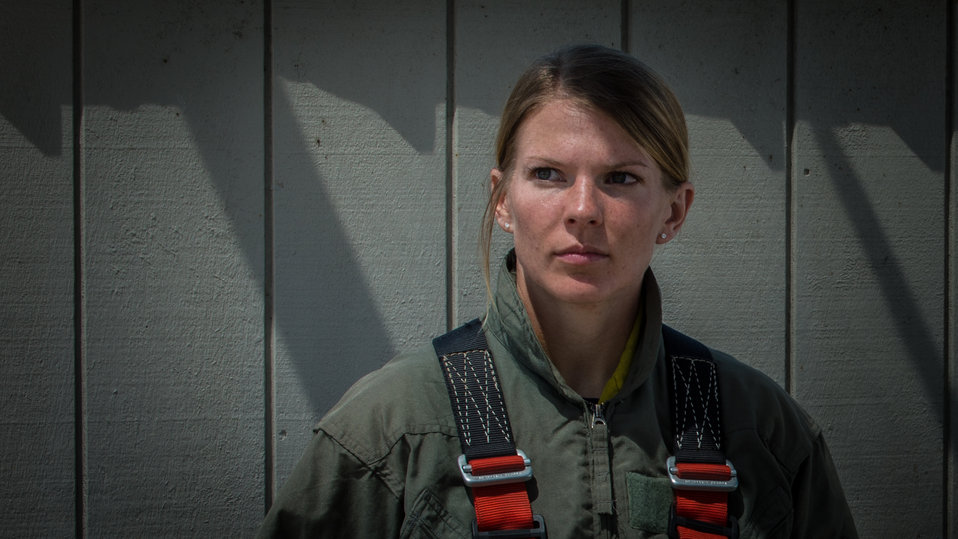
Veteran wildland firefighter rappeller Brianna Carollo at the U.S. Department of Agriculture (USDA) U.S. Forest Service (USFS) National Helicopter Rappel Program’s Rappel Academy at Salmon Air Base in Salmon, ID on Wednesday, May 14, 2014. From May 12, 2014, 72 veteran rappellers from all over the nation, 30 support staff, and three helicopters with flight crews attend the training at Salmon Air Base. Participants will rappel into the Perreau Creek area. The annual training is delivered in accordance with the National Rappel Operations Guide; strengthen leadership, teamwork, and communications within the rappel community, and produces quality aerial delivered firefighters for use in fire and aviation operations. The USDA Forest Service National Helicopter Rappel Program’s primary mission is initial attack. Rappel crews may be utilized for large fire support, all hazard incident operations, and resource management objectives.